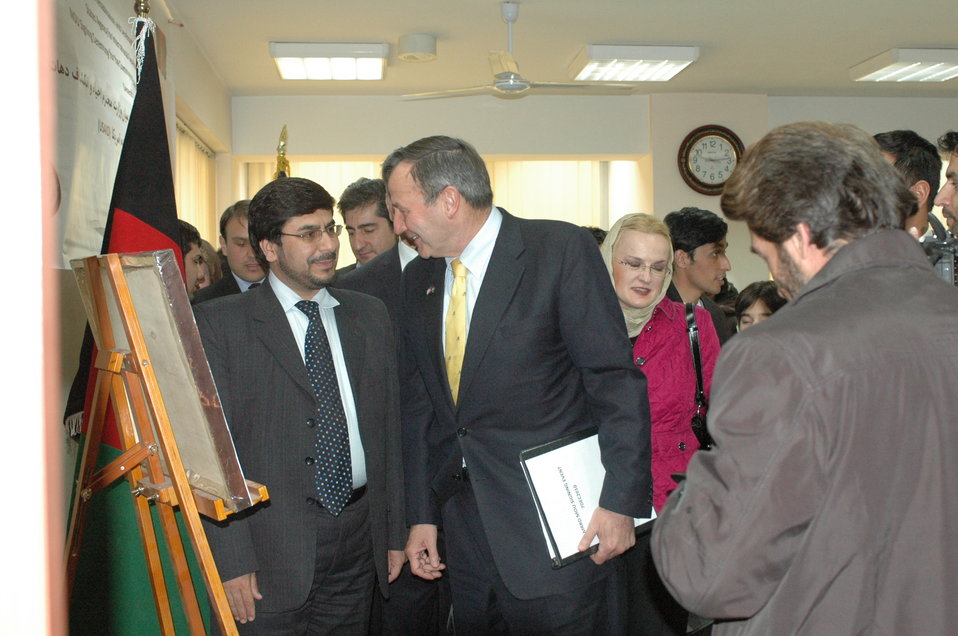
Community Based Stabilization Grants Ceremony, December 7, 2010